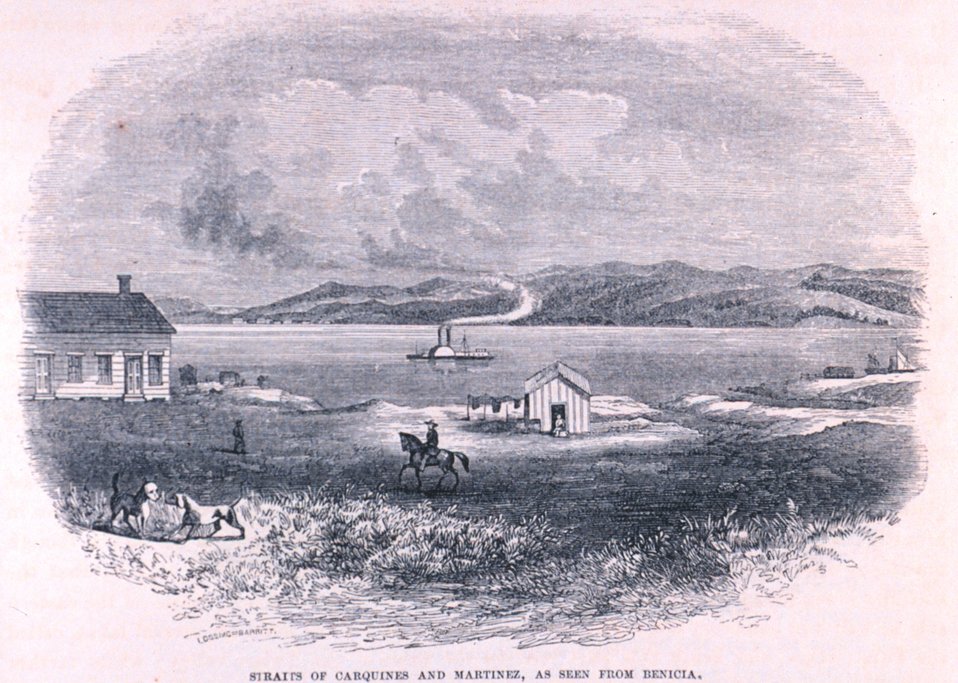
Straits of Carquinez and Martinez as seen from Benicia. In: Reports of Explorations and Surveys .... Vol. 5, p. 9. Commonly known as Pacific Railroad Surveys. Call Number F593 .U58.